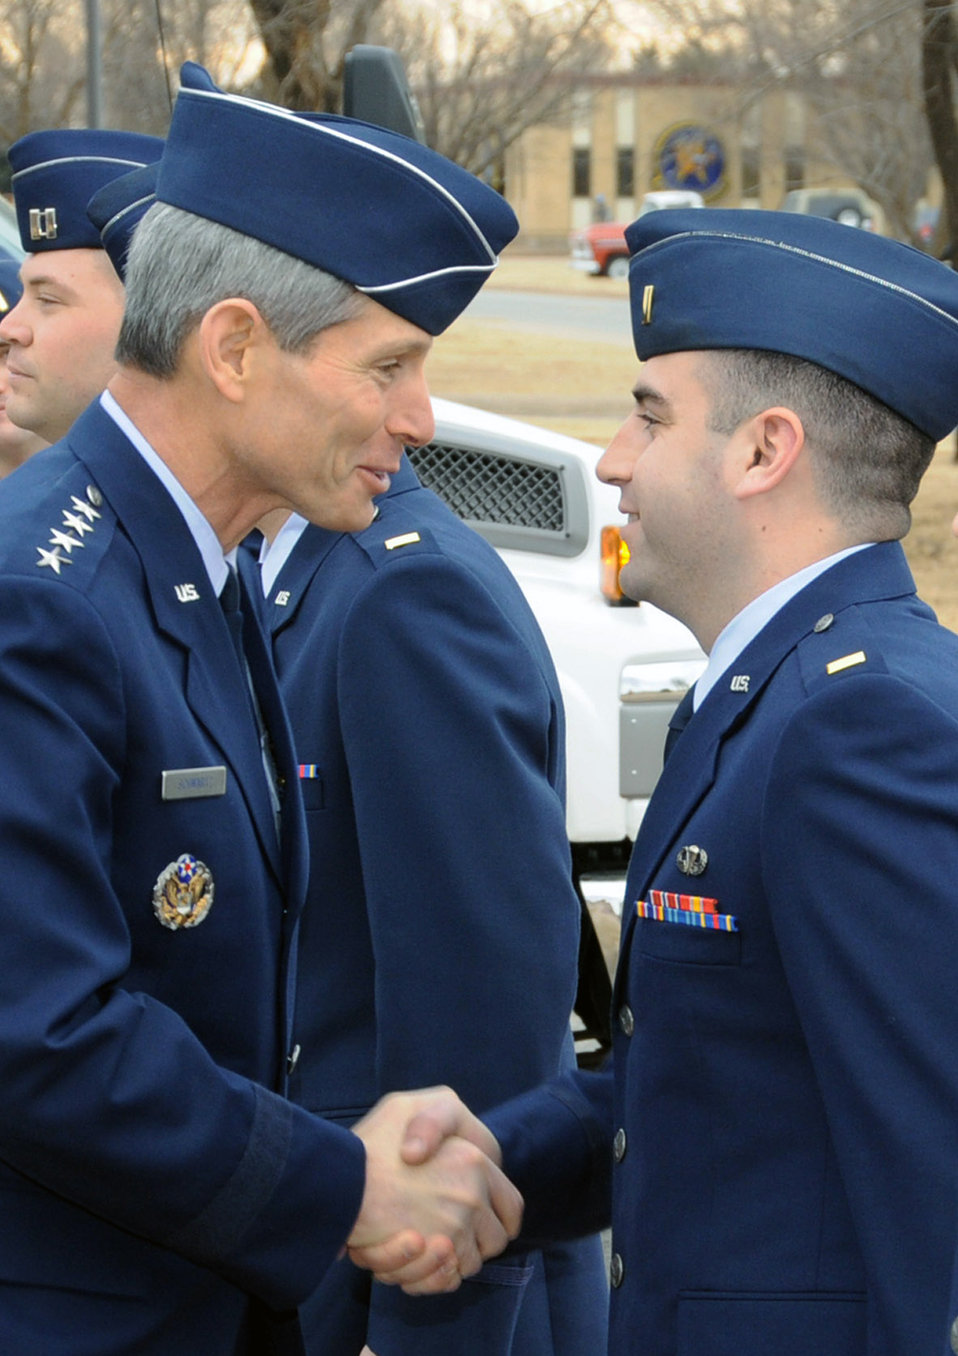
CSAF attends pilot graduation ceremony

Air Force Chief of Staff Gen. Norton Schwartz congratulates 2nd Lt. Christopher McGarvey on receiving his pilot wings at the Class 09-04 graduation Jan. 23 at Vance Air Force Base, Okla. General Schwartz was the keynote speaker at the graduation. Lieutenant McGarvey has an assignment to fly C-17 Globemaster IIIs at Travis AFB, Calif.